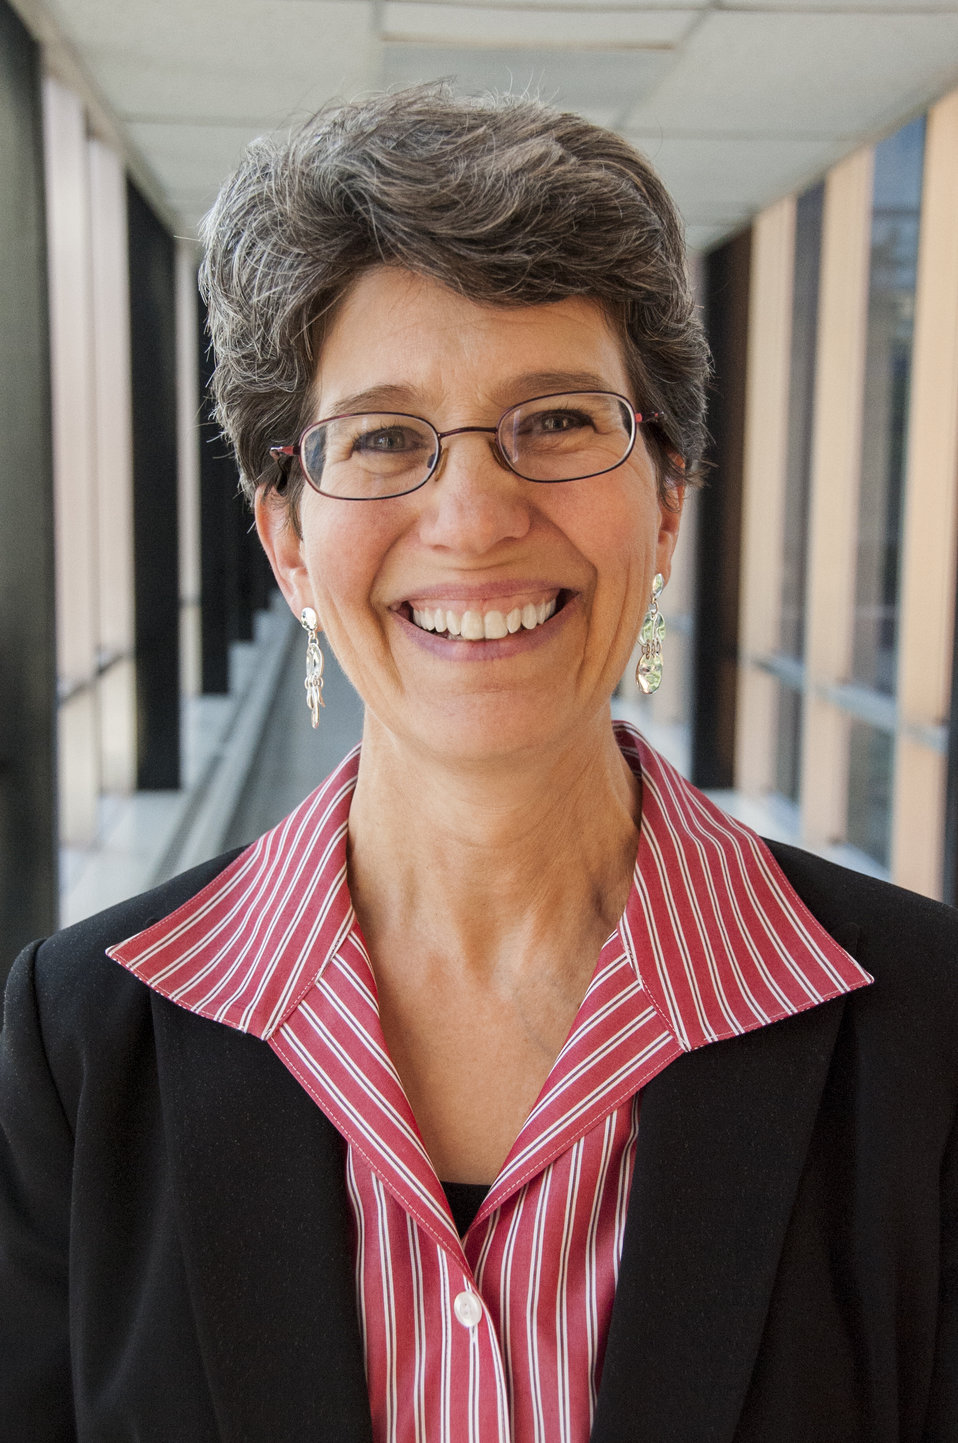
Bio Threats: FDA's A-Team (6347)

Carolyn Wilson, Ph.D., is associate director for research at FDA’s Center for Biologics Evaluation and Research. In her Bethesda, Md., laboratory, she researches the utility of pig cells, tissues and organs as materials for transplantation in humans.

Scientists at CBER work to facilitate the development of safe, effective treatments that would neutralize biological threats to public health and security. CBER regulates preventive and therapeutic vaccines, blood and blood products, human cell and tissue-based products, gene therapies and xenotransplantation. To learn more, read this FDA Consumer Update:

• FDA Teams Prepare for Biological Threats